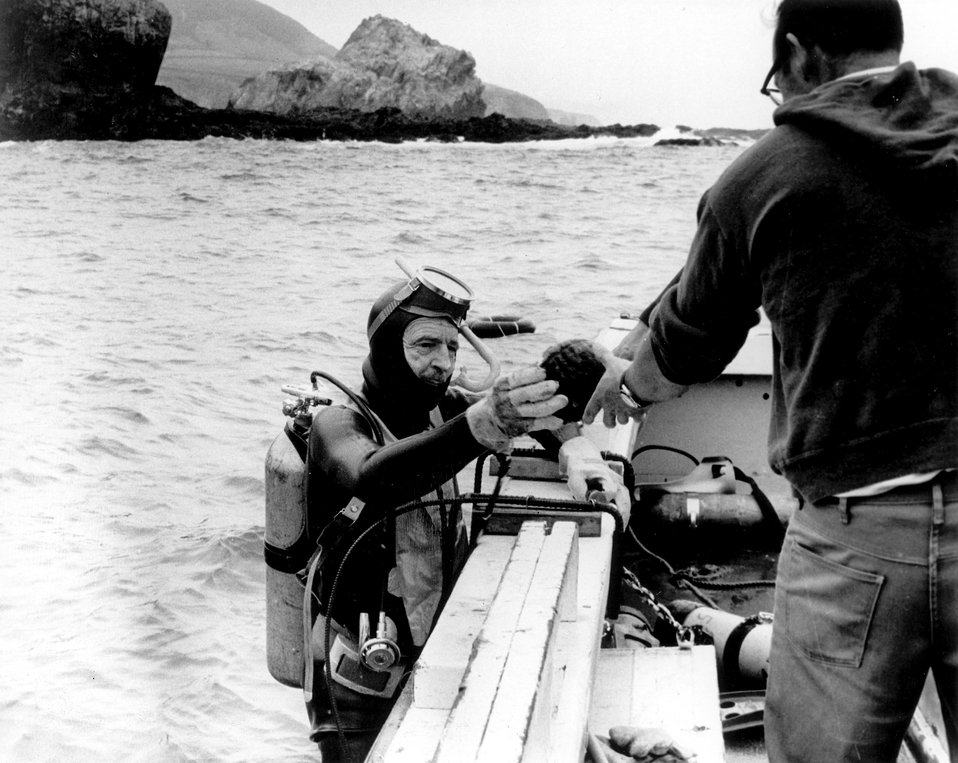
More than 14,000 abalones have been removed from the site of a breakwater for Pacific Gas & Electric Company's (PG&E's) nuclear power plant under construction near Diablo Canyon in San Luis Obispo County, California.